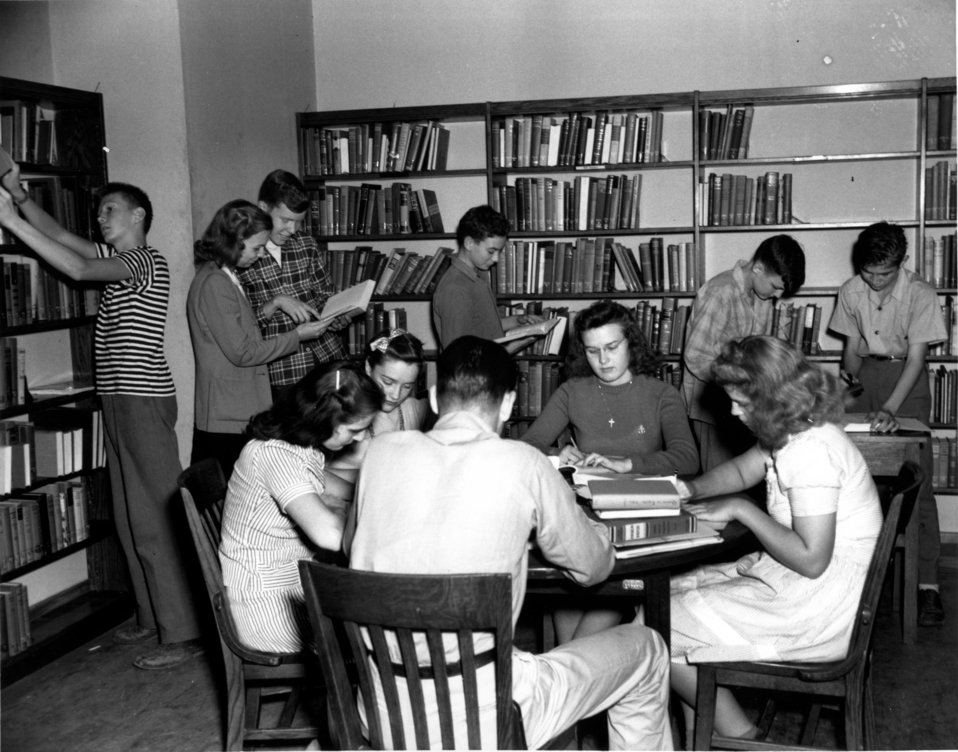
Schools at Oak Ridge